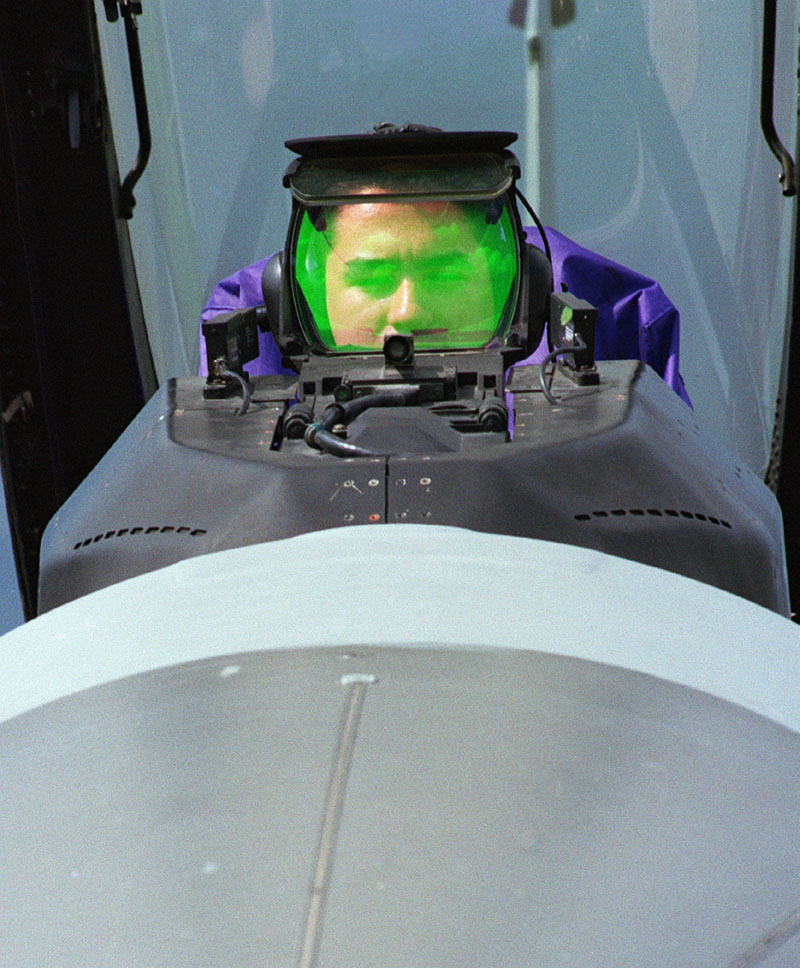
Laser check

FILE PHOTO -- Senior Airman Jean Perez, an avionics specialist, monitors a Laser Destination Calibration test through the heads-up display of an F-16C Fighting Falcon on Monday, April 26, 1999. Perez is deployed in support of Operation Allied Force.